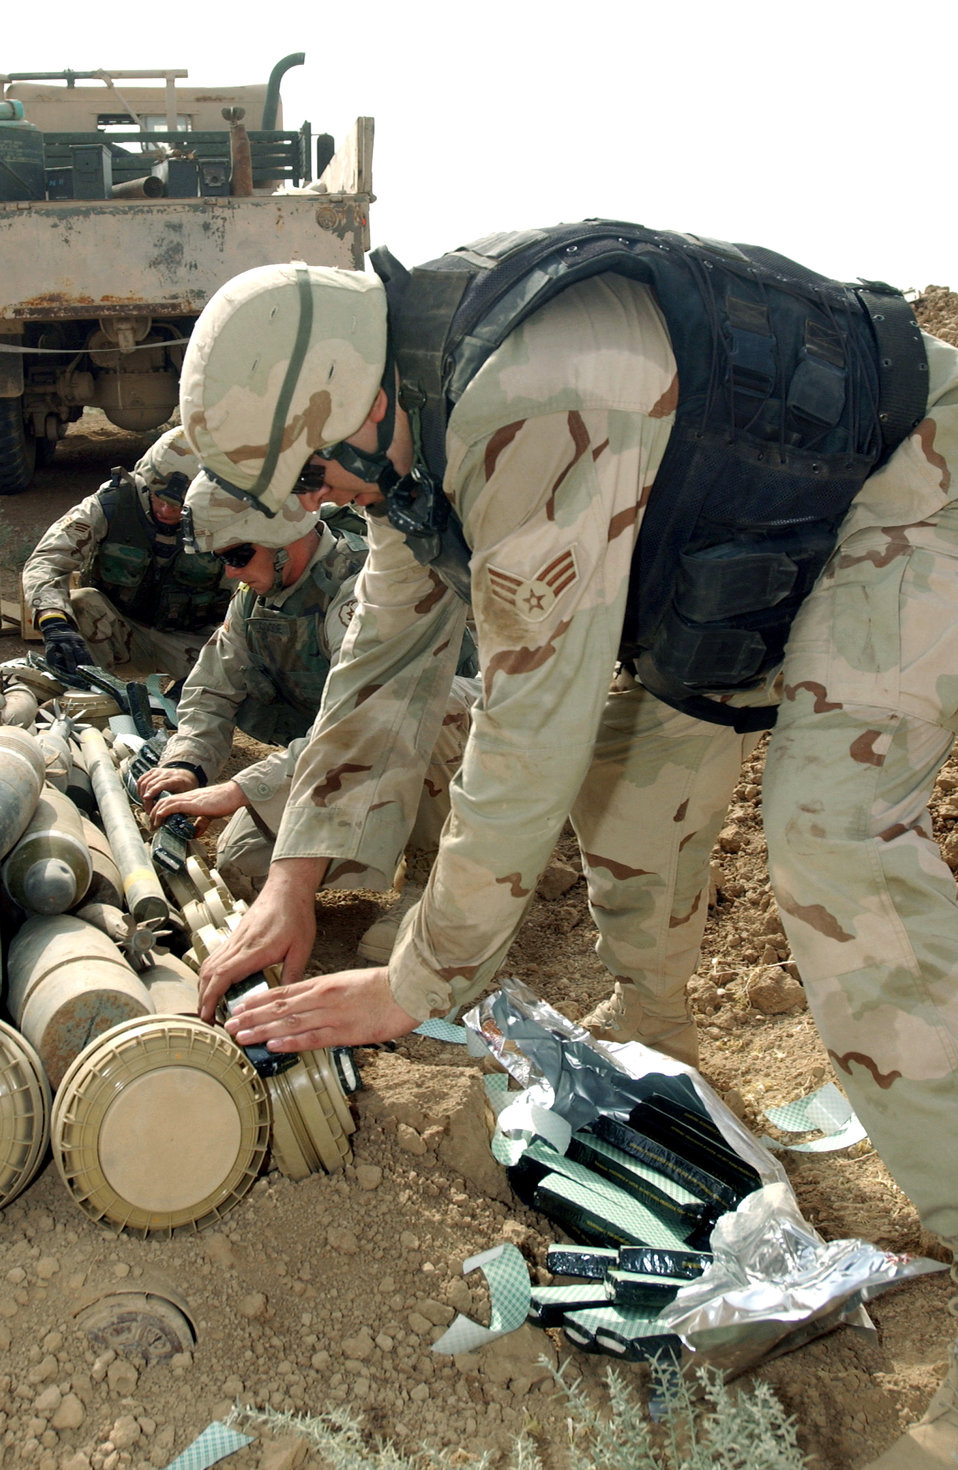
Operation Iraqi Freedom

KIRKUK AIR BASE, Iraq -- Senior Airman Randall Peterson attaches C4 explosives to a stack of live munitions. Munitions were found throughout the Kirkuk region and destroyed by explosive ordnance disposal Airmen. Airman Dighiera is deployed from Spangdahlem Air Base, Germany. He is assigned to the 506th Civil Engineer Squadron here.